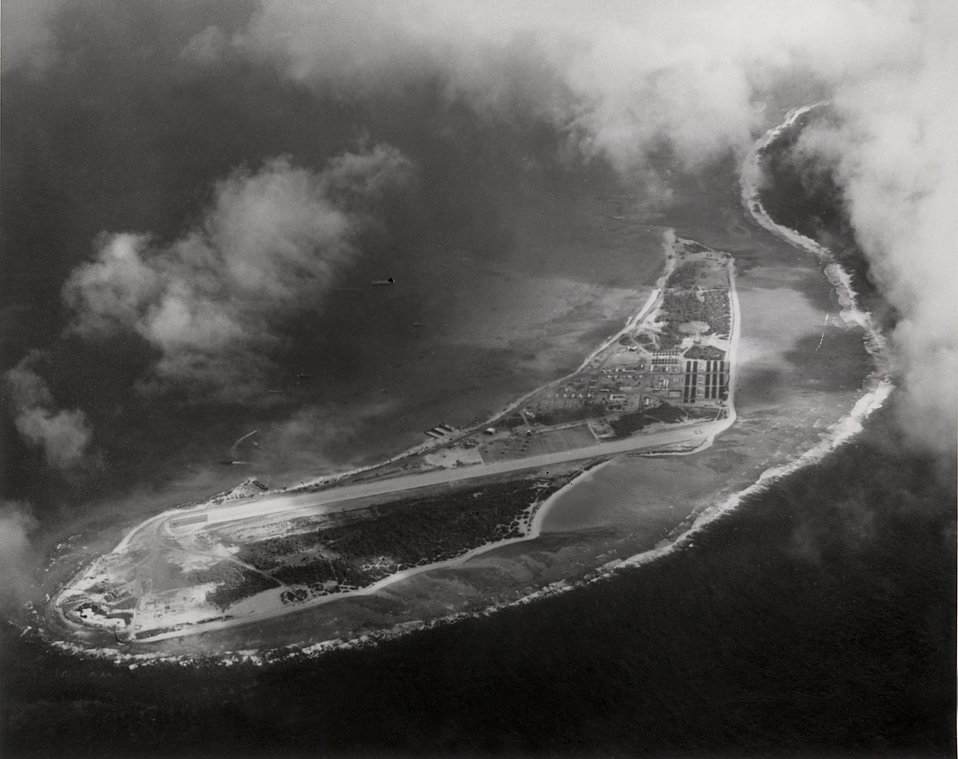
Entu, one of the 15 islands and two island complexes of the Bikini Atoll, situated in the northern part of the Marshall Islands, where a comprehensive program for the return of the natives to their home islands is under way.